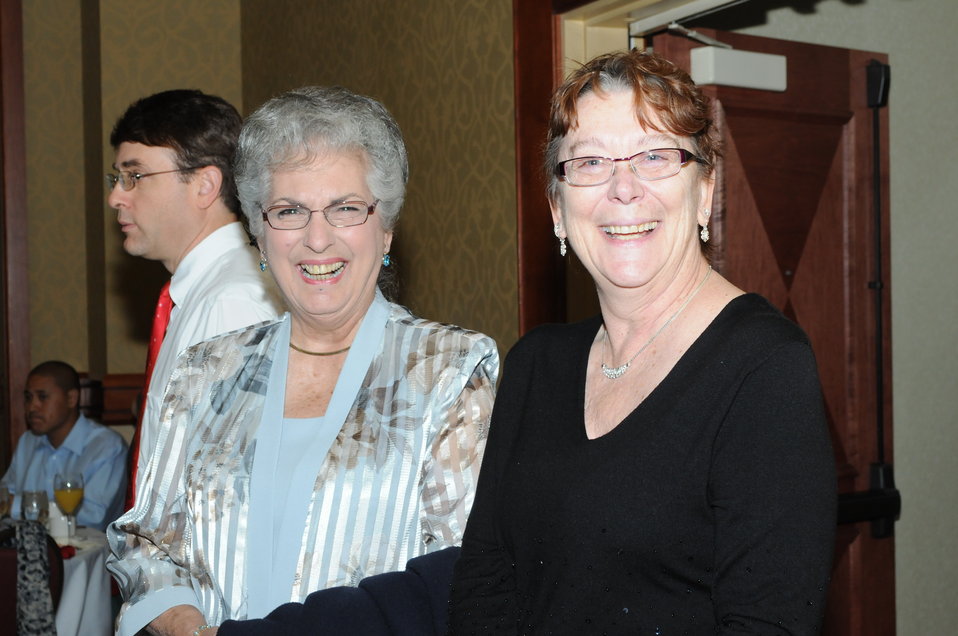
Sacramento District Holiday Party 2011